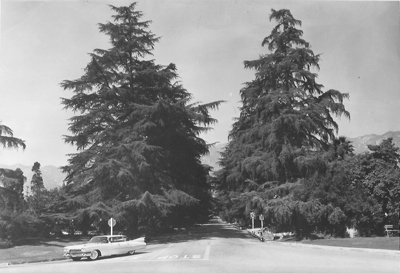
en:Christmas Tree Lane, en:Altadena, Californa